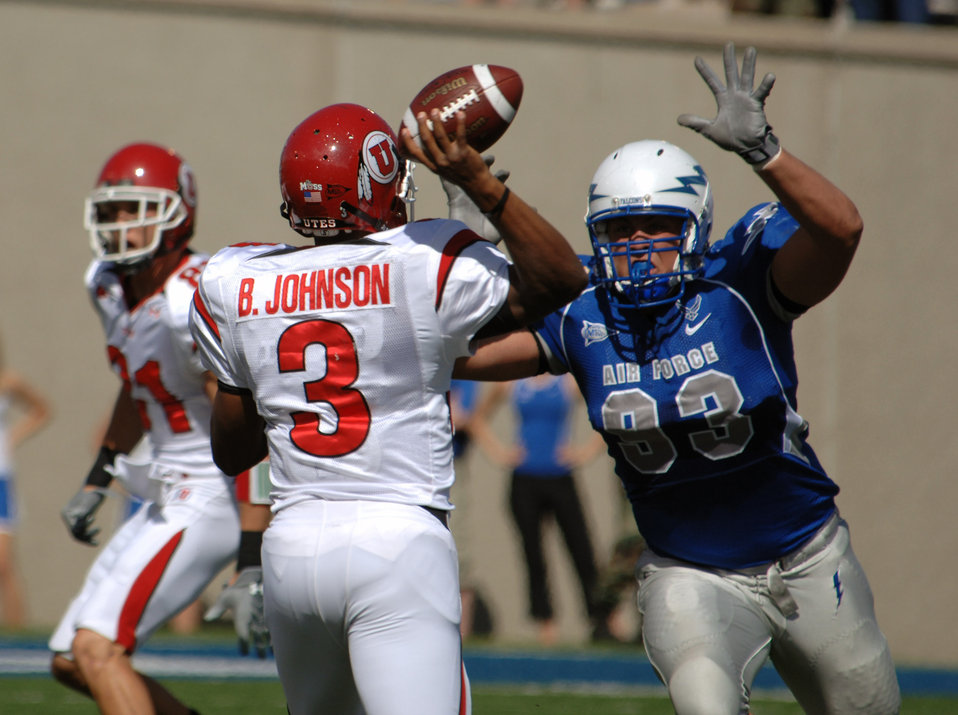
Football: Utah downs Air Force 30-23

Utah quarterback Brian Johnson gets a face full of U.S. Air Force Academy noseguard Ben Garland as he tries to unload a pass downfield Sept. 20 at the Academy in Colorado. From the middle of the 3-4 defense, Garland made four tackles, one tackle for loss and forced one fumble.